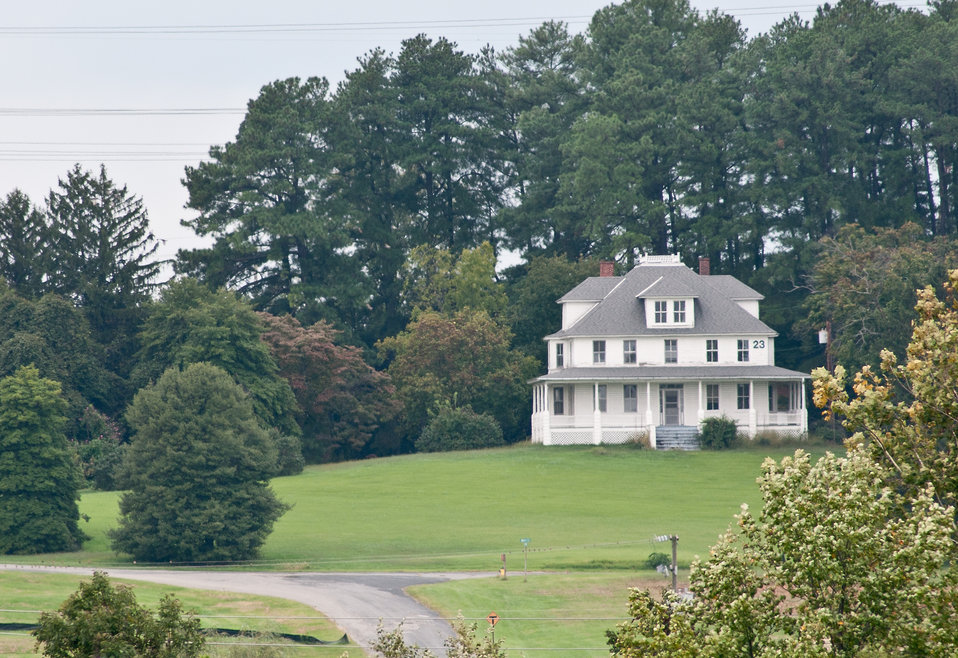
A historic house on the campus of the United States Department of Agriculture, Henry A. Wallace Beltsville Agricultural Research Center, in Beltsville, MD, on Wednesday, September 21, 2011.